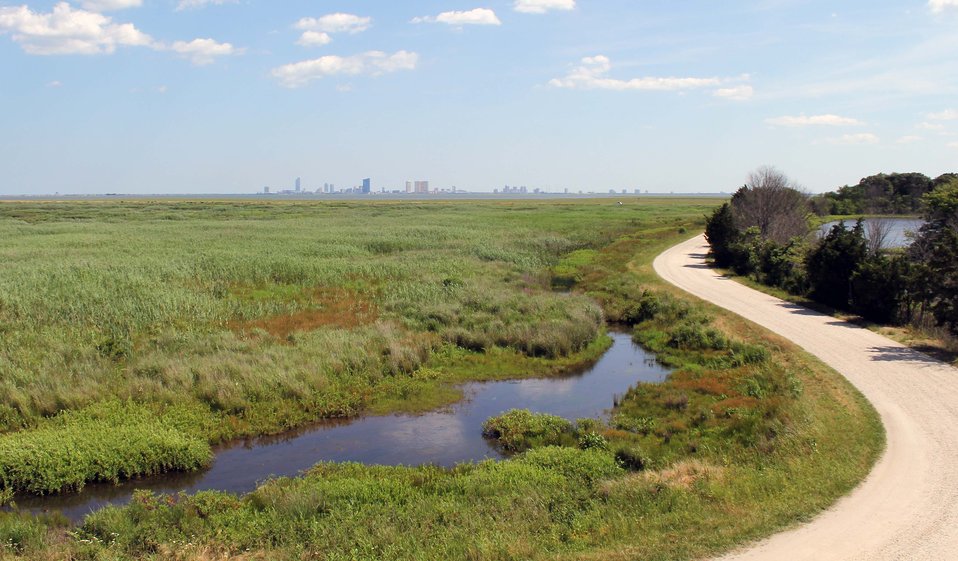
Photo of the Week - Wildlife Drive reopened at Edwin B. Forsythe National Wildlife Drive

Photo of the Week - April 22, 2013
The Wildlife Drive at the Edwin B. Forsythe National Wildlife Refuge reopened to the public on Saturday, April 20, 2013. The drive, and the refuge, will be open from sunrise to sunset every day. All trails also opened Saturday.